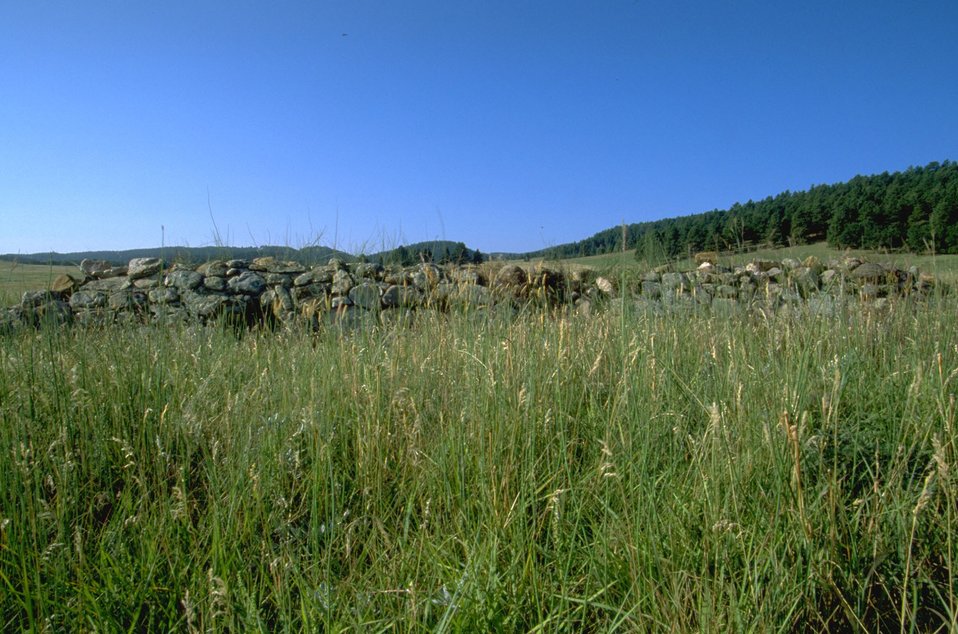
Cavalry Jumps at the south end of Fort Meade